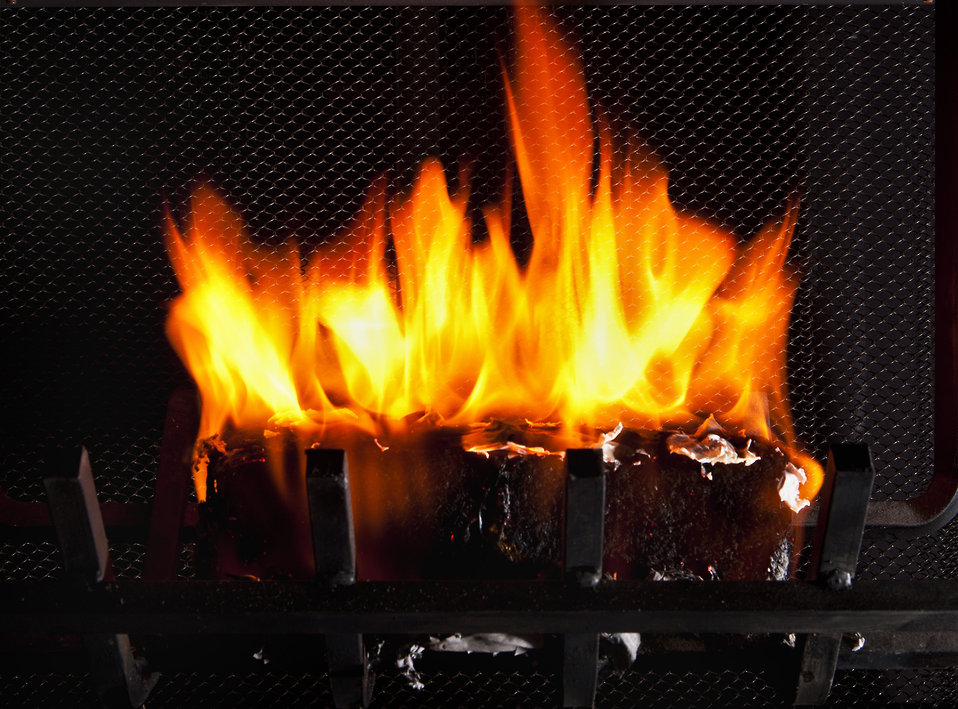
This burning bio-based log is made of grass clippings and contains no petroleum-derived chemicals burns in a fireplace on Jan. 28, 2004. The bio-based log was developed by the U.S. Department of Agriculture (USDA) Agricultural Research Service (ARS).